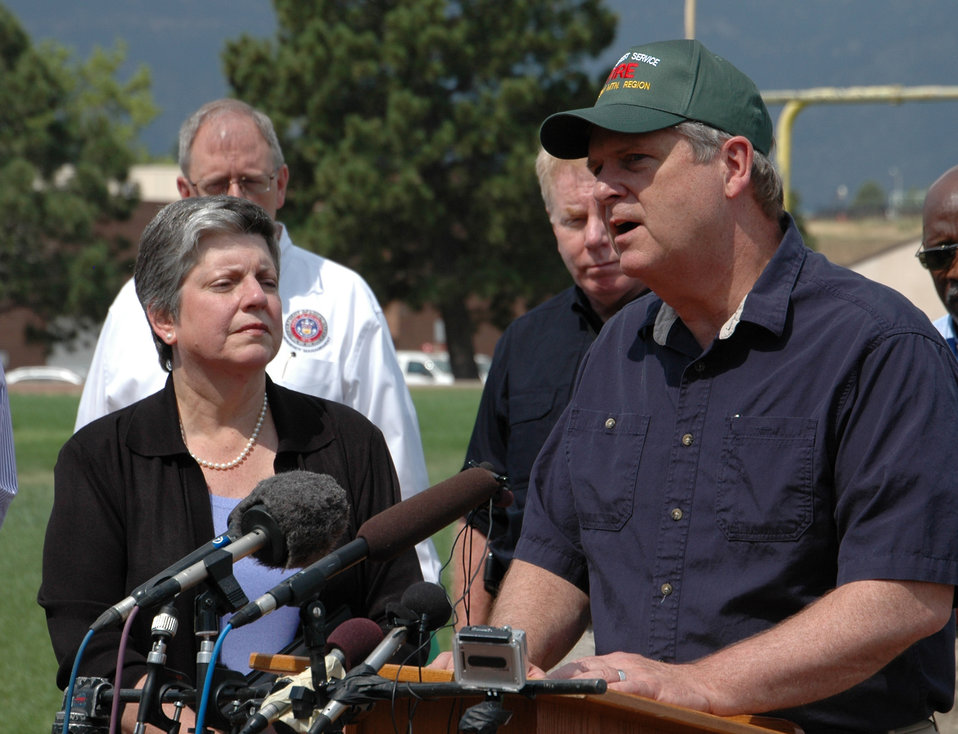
Homeland Security Secretary Janet Napolitano and Agriculture Secretary Tom Vilsack respond to questions during a press conference about the Waldo Canyon Fire near Colorado Springs, CO on Tuesday, July 3, 2012.